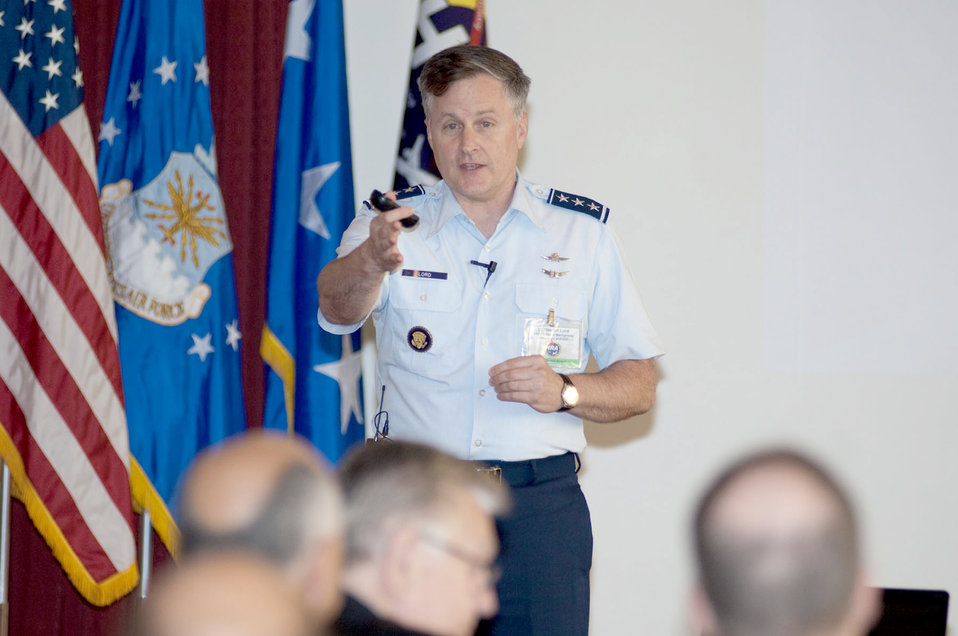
General calls for network utility, security balance

Lt. Gen. William T. Lord speaks to attendees of the Hanscom Representatives Association about information technology challenges, during a luncheon Aug. 13, 2010, at Hanscom Air Force Base, Mass. General Lord is the Air Force chief information officer.